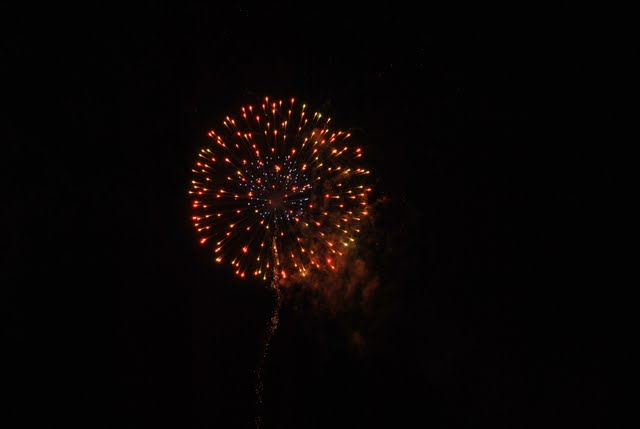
July 4th Celebration at U.S. Embassy in the Dominican Republic

Guests watch the fireworks display at the U.S. Independence Day celebration at the U.S. Embassy Santa Domingo in Dominican Republic at the Chief of Mission's Residence on July 2, 2010.